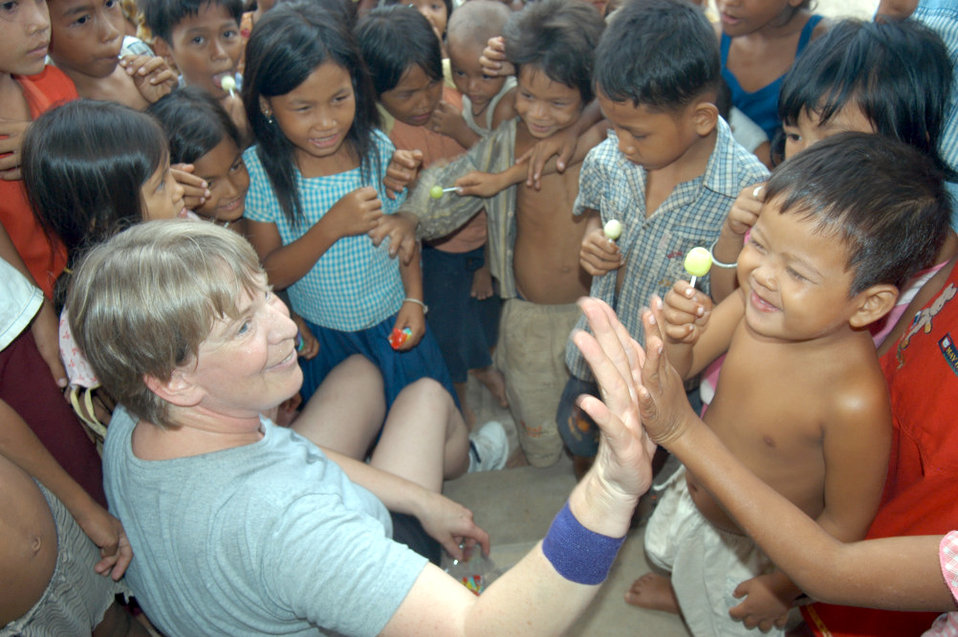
High-five!

KEP, Cambodia -- Master Sgt. Rita Greiner gives a high-five after handing out a lollipop to a Cambodian boy as more Cambodian children gather in a hospital compound here May 22. Sergeant Greiner is an orthopedics technician and is part of a 20-person blast resuscitation and victim assistance team. She is assigned to the 99th Medical Operations Squadron at Nellis Air Force Base, Nev.